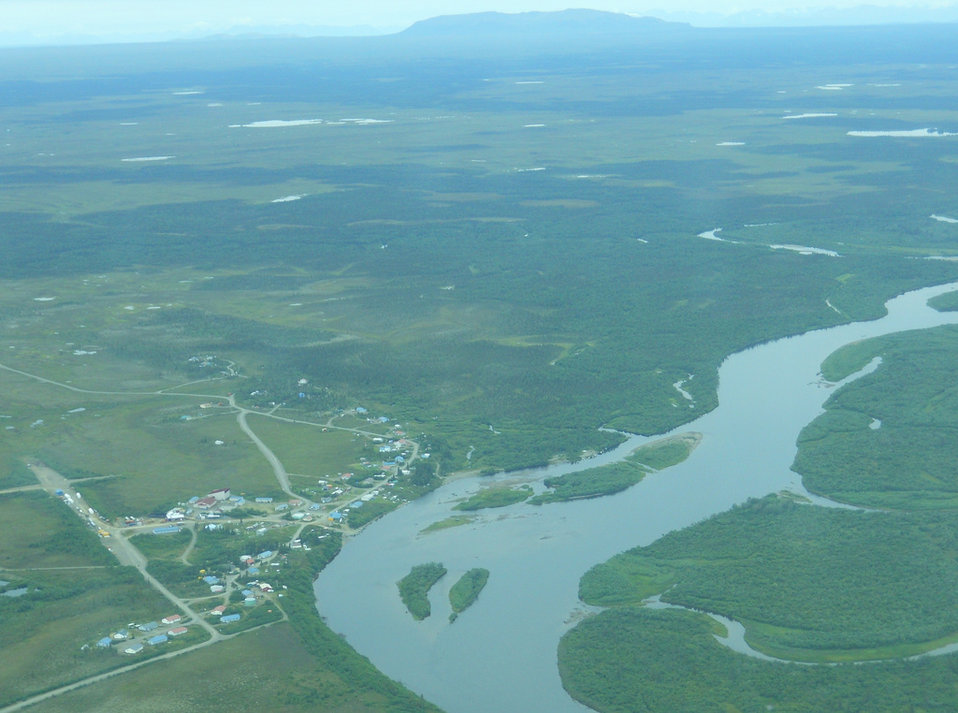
August 11, 2011 Village of Koliganek, Alaska

There are 31 federally-recognized tribal governments in the Bristol Bay area, 13 of which are within our study area of the Kvichak and Nushagak watersheds.

Many of these villages depend on sockeye salmon for subsistence food and as a source of income.

Visit www.epa.gov/bristolbay for more information about EPA's Bristol Bay Watershed Assessment